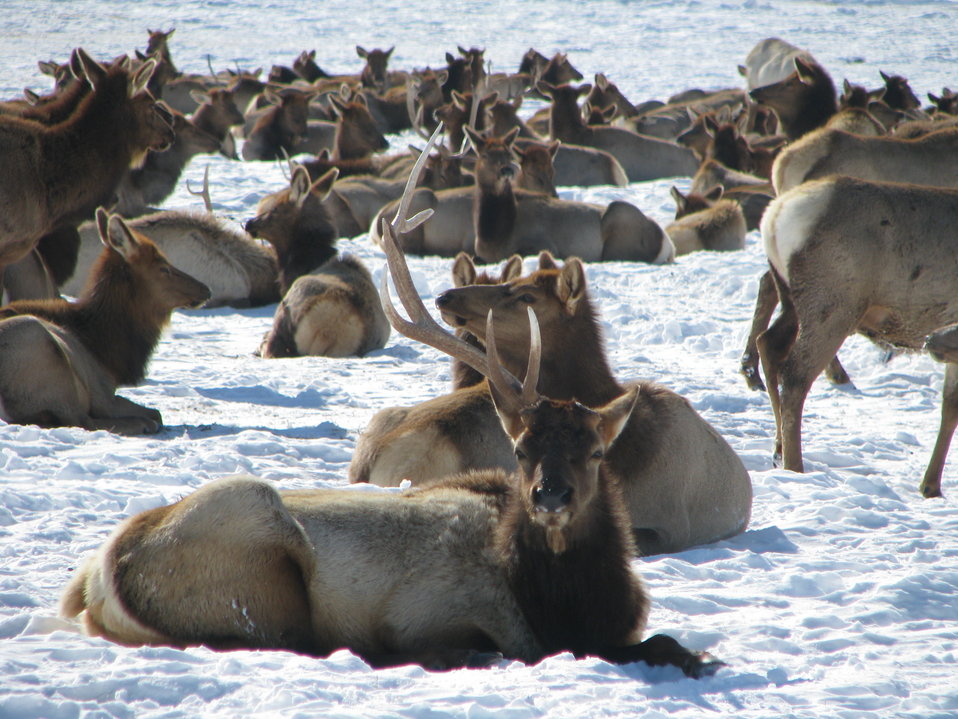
Bull Elk and Herd

A bull elk with one antler rests among a large elk herd at the National Elk Refuge in Wyoming. Bulls typically do not lose both antlers at the same time. When the first antler falls off, the second will follow shortly after.